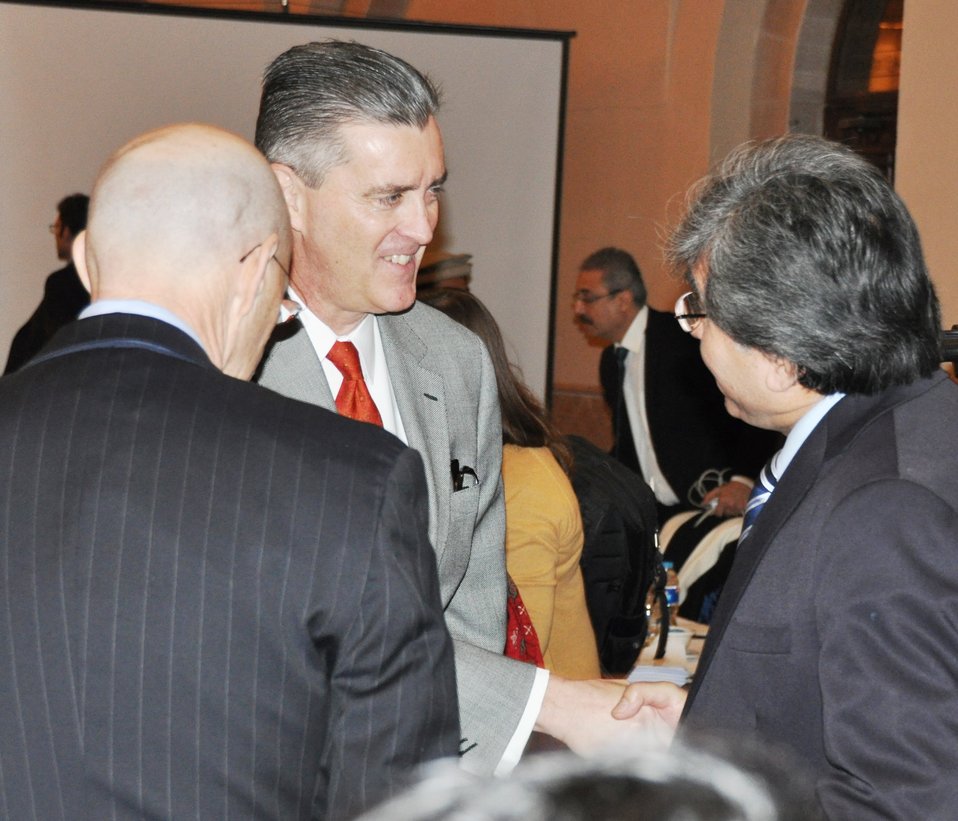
PHDS Launch

The PDHS 2012-13 survey was jointly implemented by the Government of Pakistan’s Ministry of National Health Services, Regulation and Coordination and the United States Government through the United States Agency for International Development (USAID). Data for this survey was collected from a nationally representative sample of nearly 13,000 households, and more than 15,000 women and 3,000 men between the ages of 15 and 49 years were interviewed.